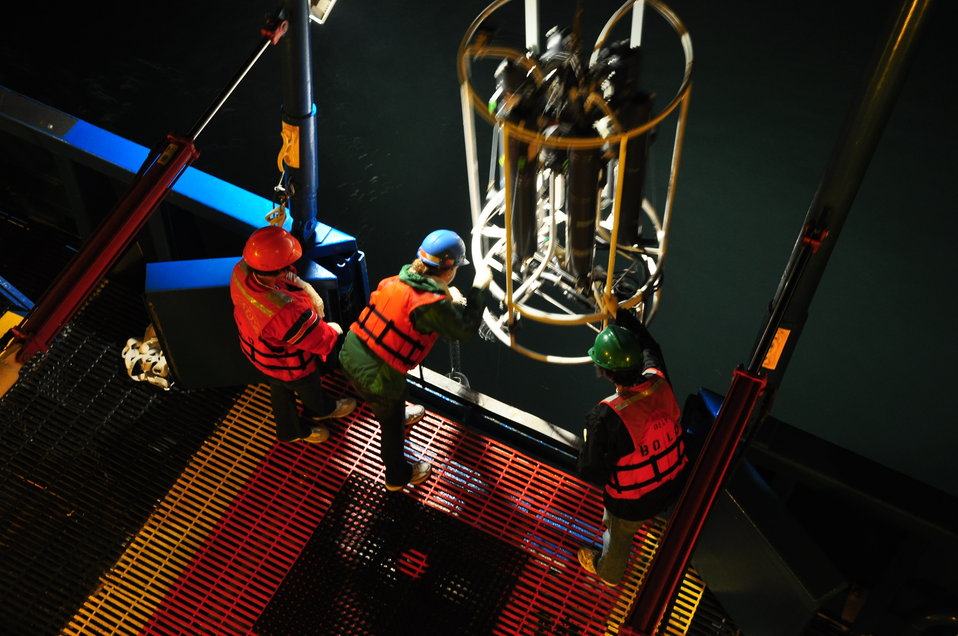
July 2009, Carefully deploying the CTD and rosette water sampler at night

CTD stands for 'conductivity, temperature, and depth,' which are readings that are taken by electronic probes attached to this rosette water sampler. Check out a 12 hour time lapse video! www.epa.gov/ne/boldkids/videos.html

Photo taken by Jeanethe Falvey, U.S. EPA